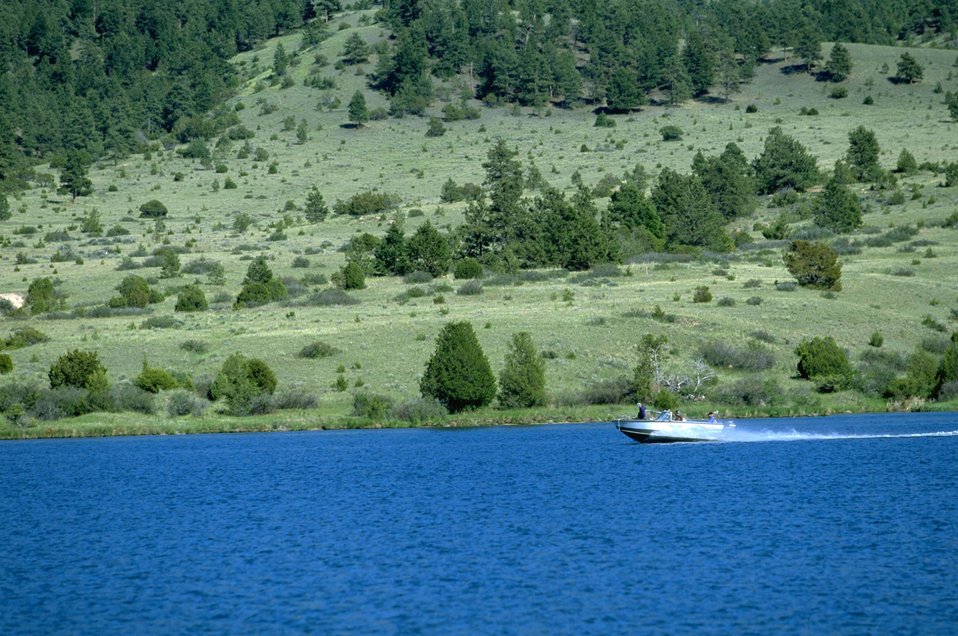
Speed boat on Hauser Lake